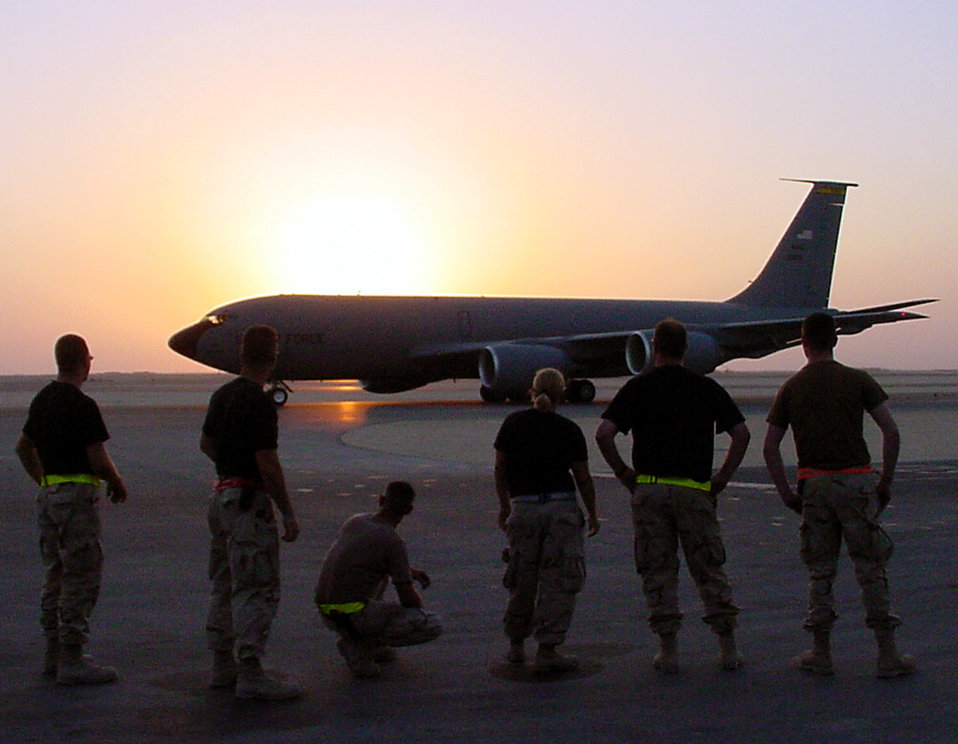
Another job well done

SOUTHWEST ASIA -- Tanker maintenance troops from the 319th Air Refueling Wing at Grand Forks Air Force Base, N.D., watch as a tanker from the 22nd ARW at McConnelll AFB, Kan., rolls off into the sunset for a night air-refueling mission. Tanker units from Grand Forks; McConnell; MacDill AFB, Fla; Robins AFB, Ga.; and Fairchild AFB, Wash., combined here for a short time to work together in the 340th Expeditionary Air Refueling Squadron.